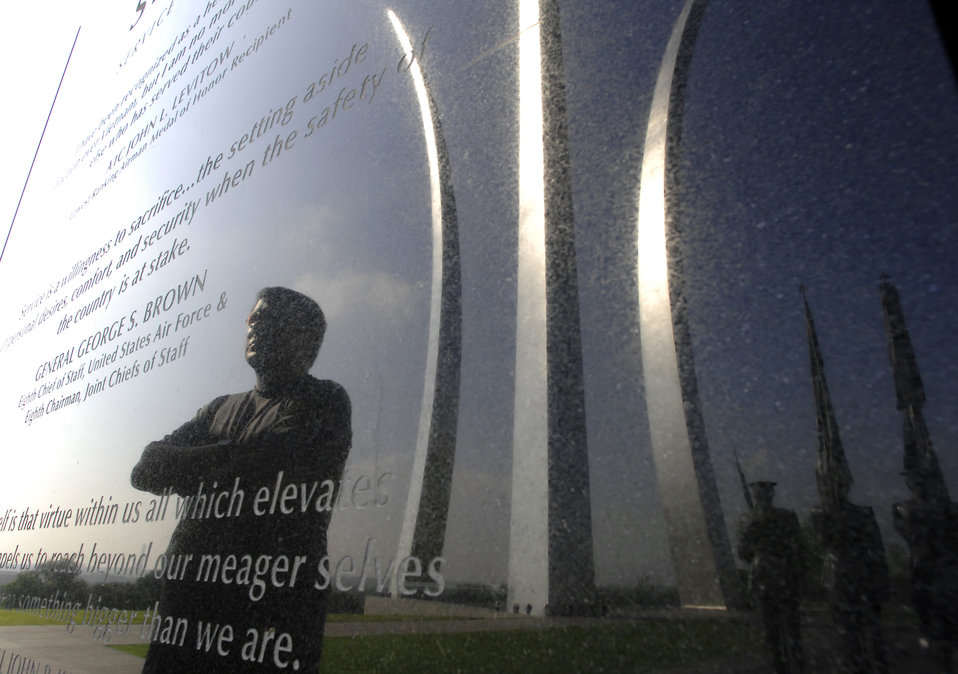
Visiting the memorial